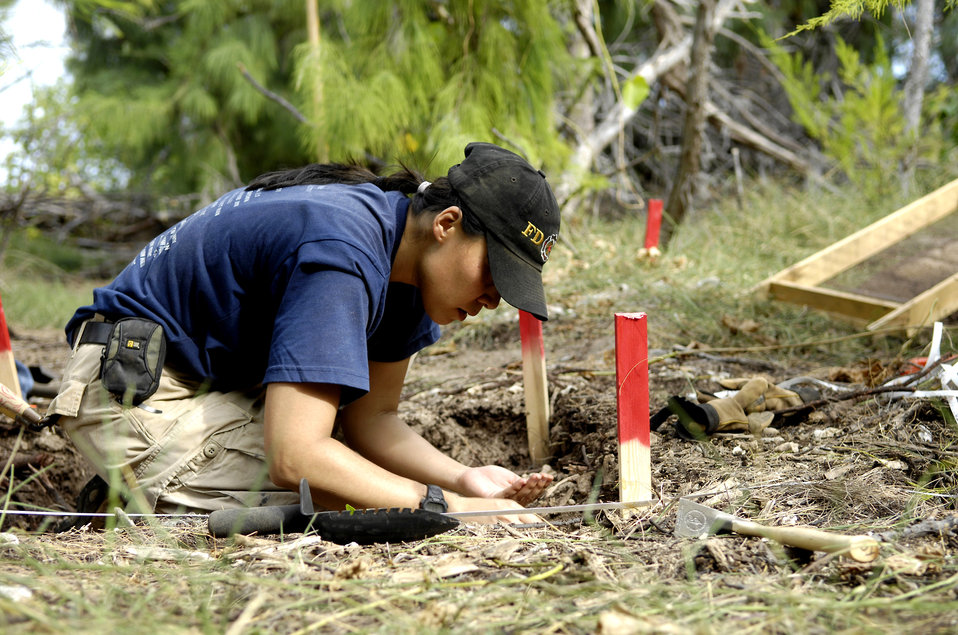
Servicemembers search for POW/MIAs on Wake Island

Denise To excavates a dig site Jan. 12 on Wake Island. Ms. To, a forensic anthropologist, was sent to do a site survey after Wake Island officials notified the Joint POW/MIA Accounting Command of bones located on the island. JPAC officials are charged with achieving the fullest possible accounting of all Americans missing as a result of past conflicts.